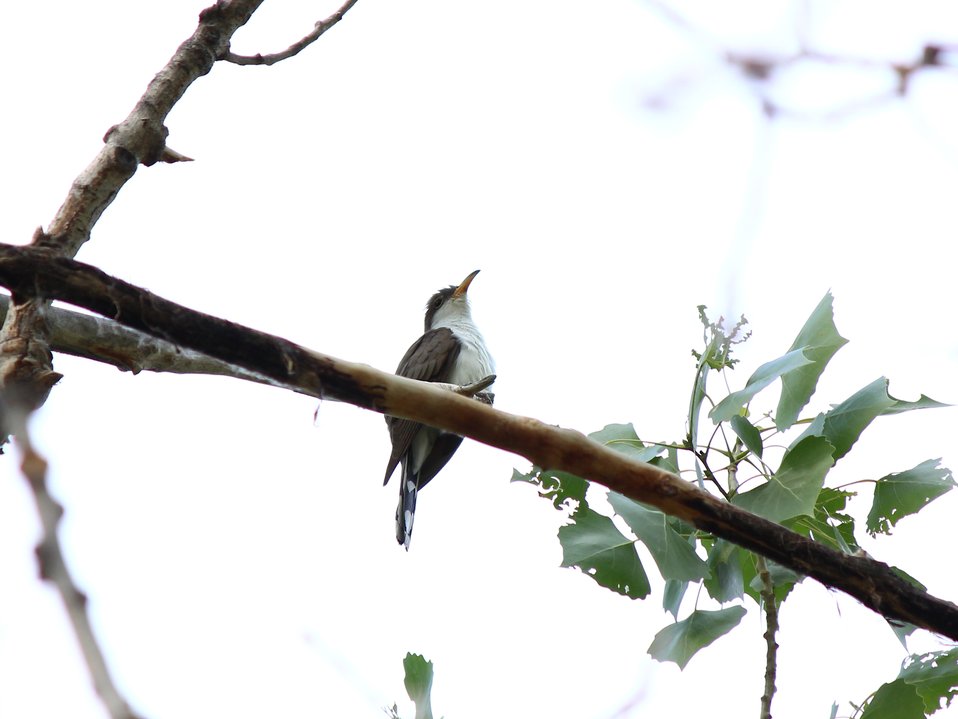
Western yellow-billed cuckoo

Grand Junction Wildlife Area along Gunnison River. Creed Clayton / USFWS.